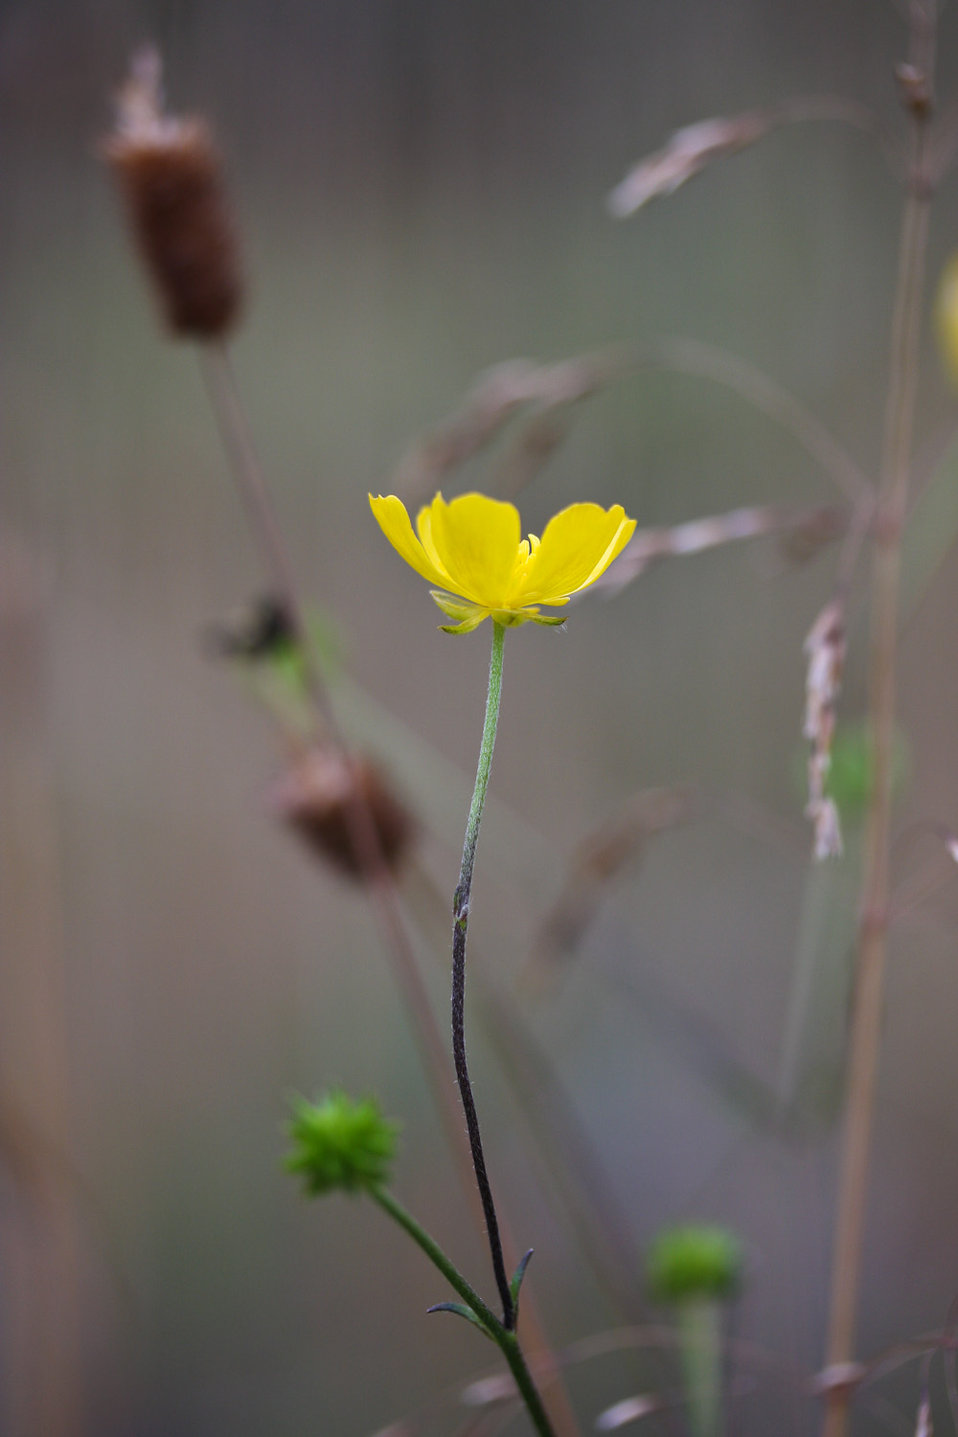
Fall buttercup

Lisa Hupp/USFWS